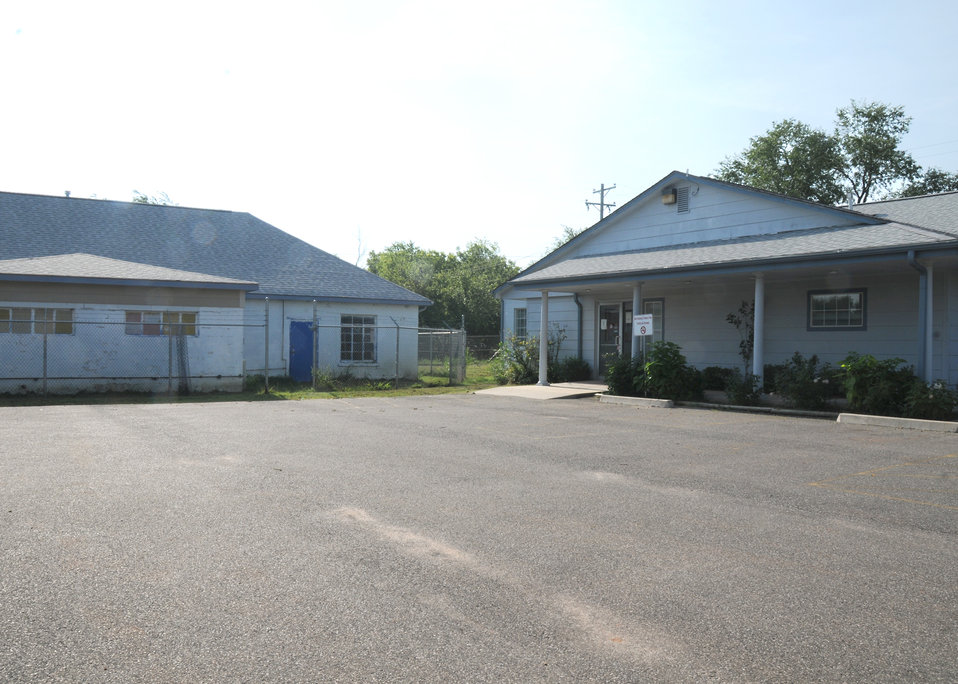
The Mary Mahoney Health Center in Langston, OK. The clinic received a CF grant of $100,000.00 and a CF l Direct Loan of $563,863.00 from Rural Development from American Recovery and Reinvestment (ARRA) funding. The new expansion will connect the two buildings and add additional examing rooms and a dental facility.